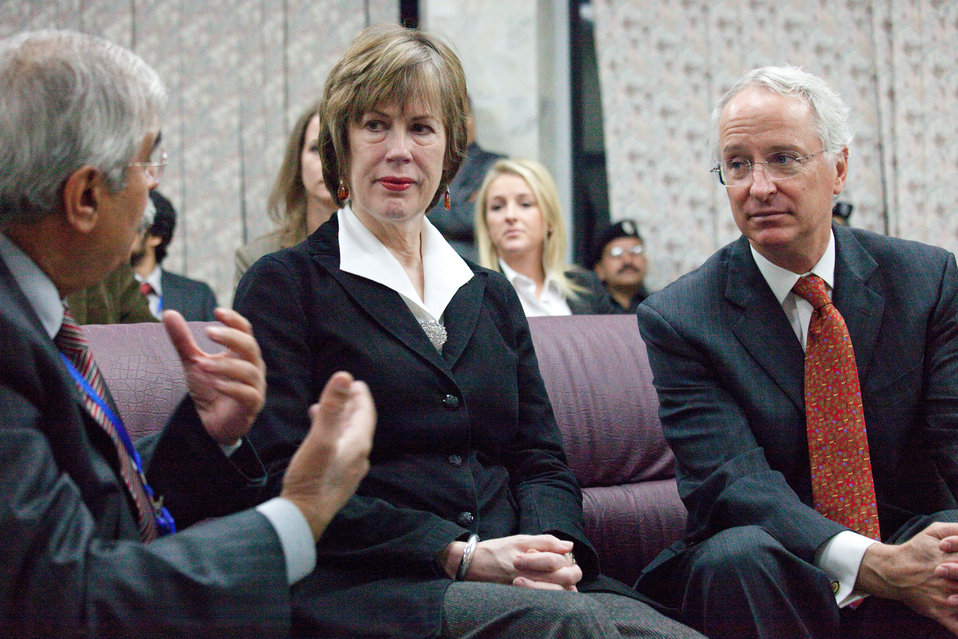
Telemedicine

Rawalpindi, January 5, 2012 – Ambassador Cameron Munter and his wife Dr. Marilyn Wyatt sitting with Dr. Asif Zafar Malik, Project Director Telemedicine/training and other officials.